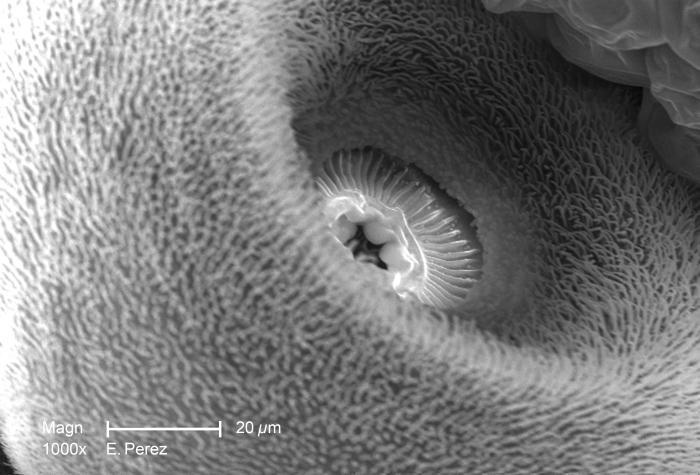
This is the second of three scanning electron micrographs (SEM) at successively higher magnifications revealing in greater and greater detail, the morphology of the 'scape', or the first segment of this unidentified mosquito's left antenna (see PHIL 10553 and 10555). Magnified 1000X, which is twice that of 10553, you'll note that the central region of the scape is concave, and it's into this concavity that the second segment of the antenna, known as the 'pedicle', will interlock.